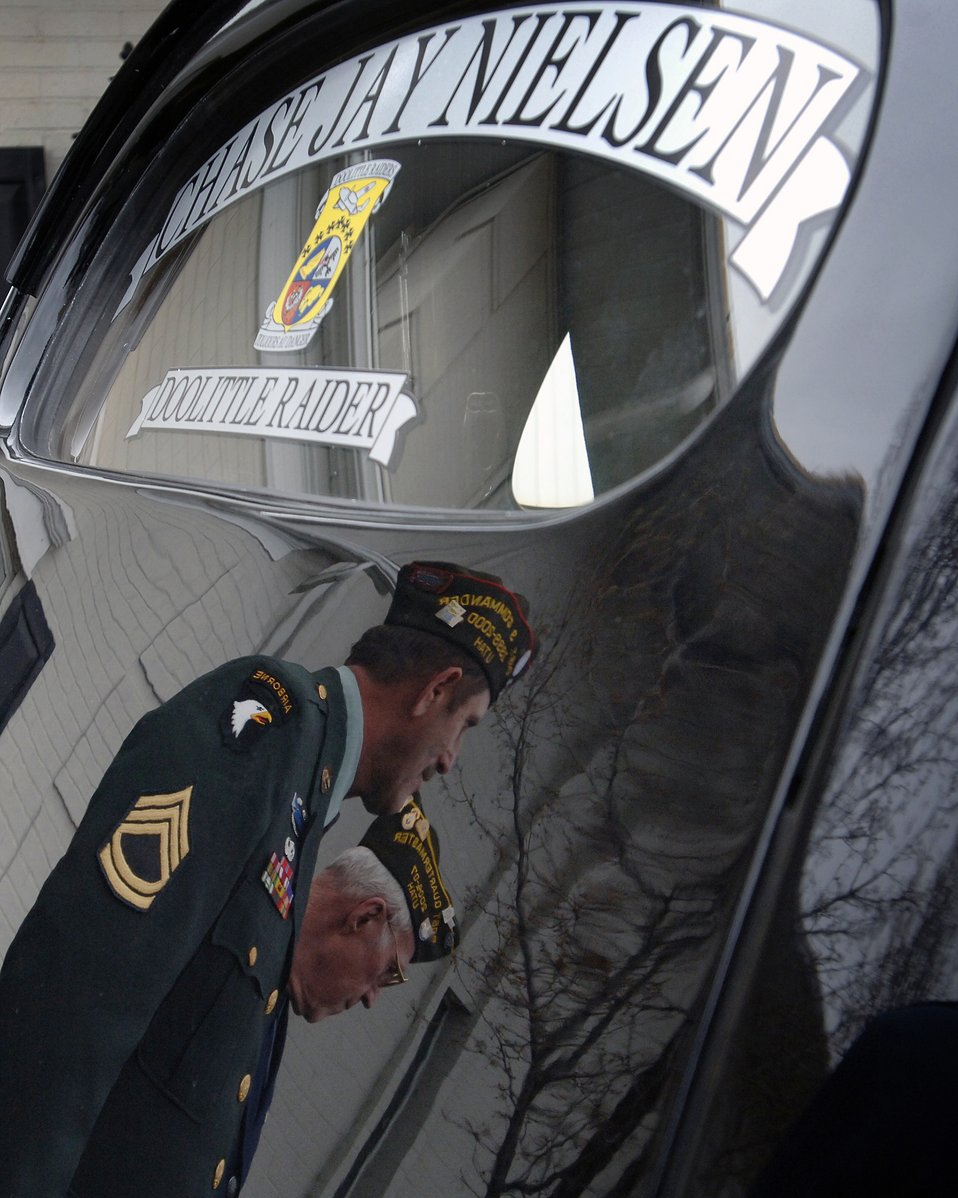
Lt. Col. Chase Nielsen service held March 28

Members of Veterans of Foreign War Post 1695 and Post 8307 from Brigham City and Layton Utah, provided military honors during the memorial service of Lt. Colonel Chase J. Nielsen in Hyrum, Utah March 28. Colonel Nielsen was one of the few remaining members of the famed Doolittle Raiders. The members of the Doolittle Raiders reached national acclaim in 1942 after launching the first successful aerial bombing raid on Tokyo, Japan as retaliation for the Japanese bombing of Pearl Harbor, Hawaii in December of 1941.